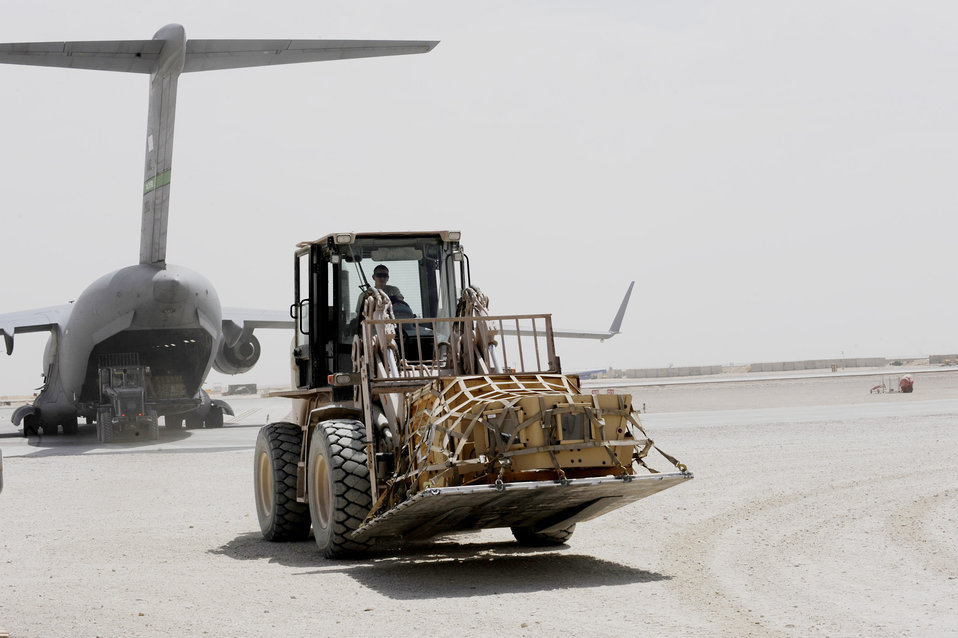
Airmen moving the mission in Afghanistan

Aerial porters assigned to the 451st Expeditionary Logistics Readiness Squadron Det. 1 offload pallets from a C-17 Globemaster III assigned to the 10th Airlift Squadron at McChord Air Force Base, Wash., with a 10k all-terrain forklift April 15, 2010, at Camp Bastion, Afghanistan.